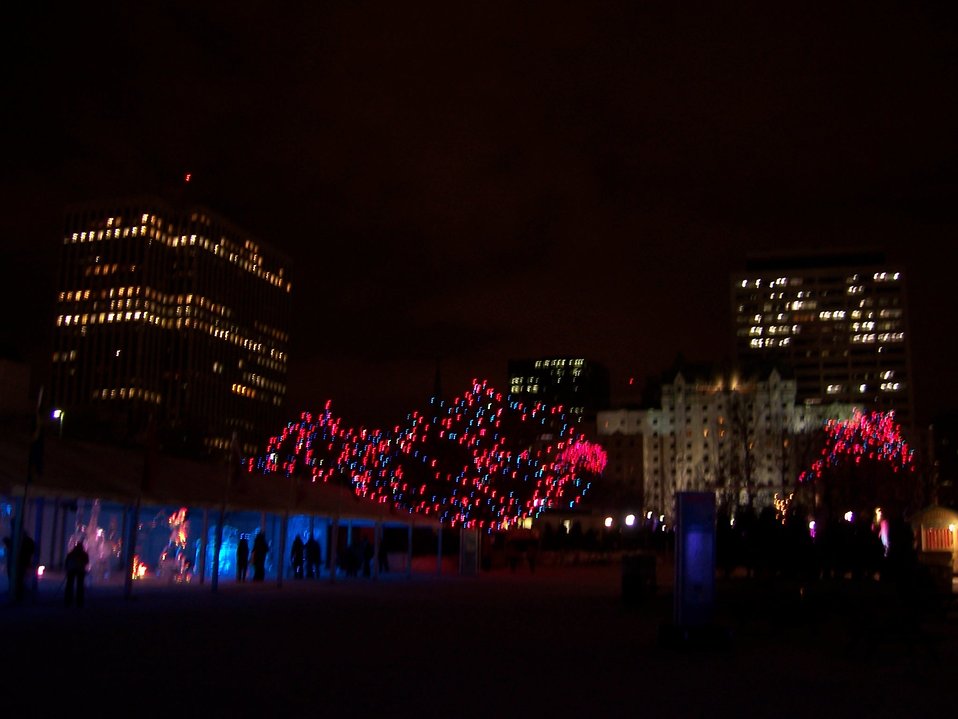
ottawa at night